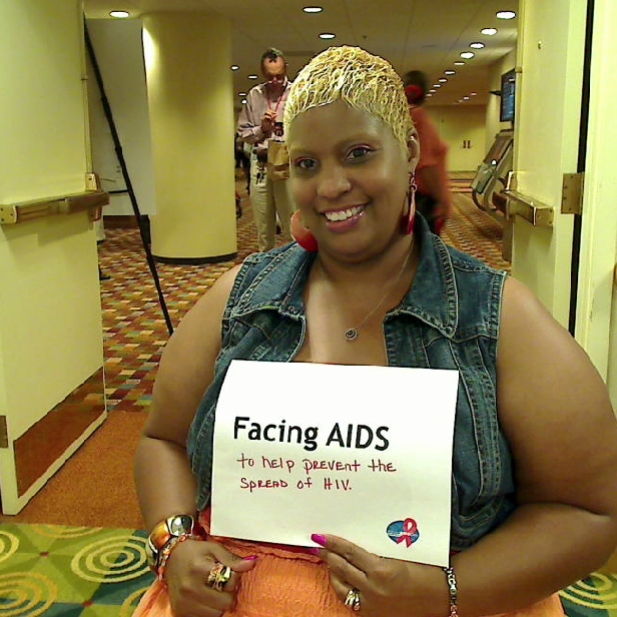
We are Facing AIDS to help prevent the spread of HIV.